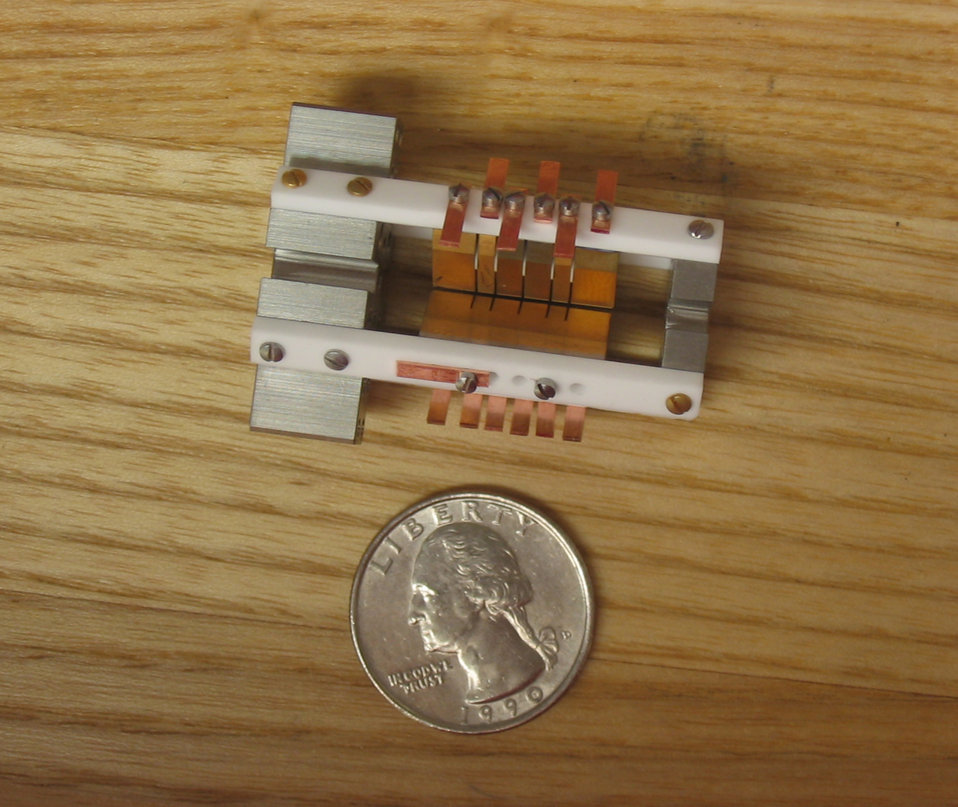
NIST Second Quantum Logic Clock Based on Aluminum Ion is Now Worlds Most Precise Clock

The ion trap where the main action takes place in the NIST aluminum ion clock. The aluminum ion and partner magnesium ion sit in the slit running down the center of the device between the electrodes.